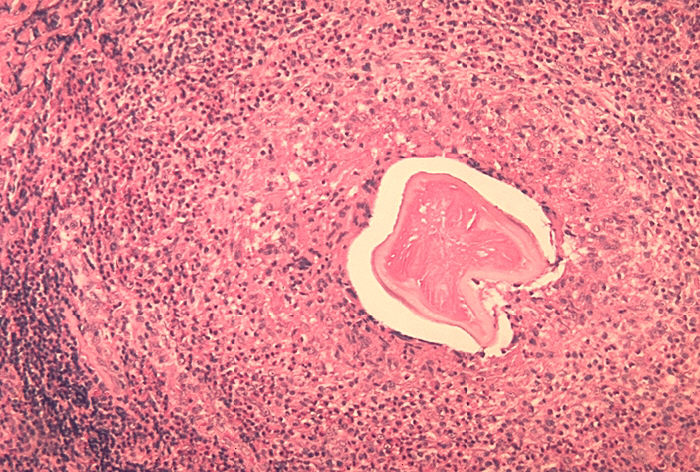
Histopathology showing cross section of Dirofilaria worm in eye.